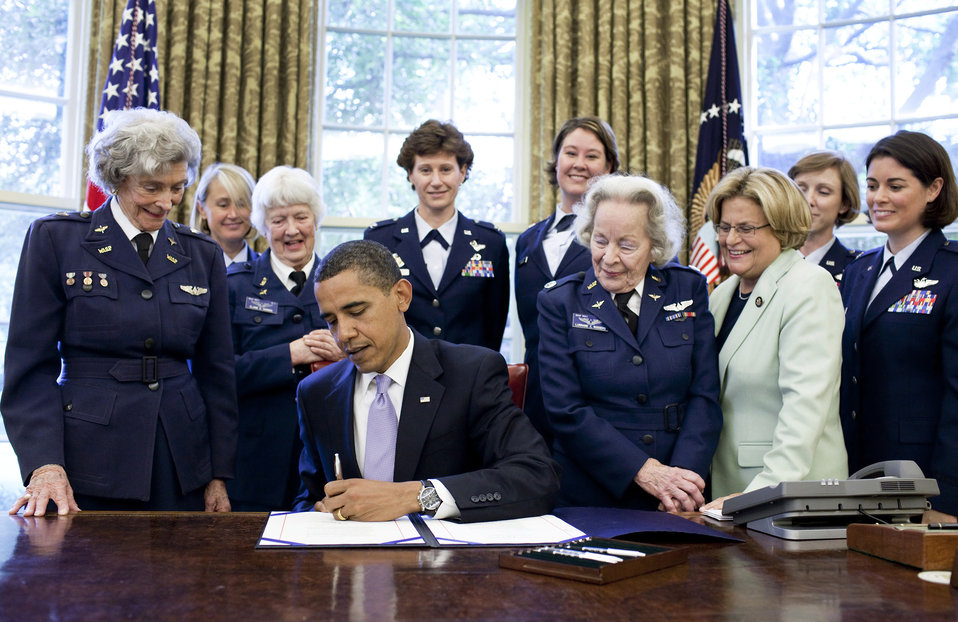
WASP awarded Congressional Gold Medal for service

President Barack Obama signs S.614 in the Oval Office July 1 at the White House. The bill awards a Congressional Gold Medal to Women Airforce Service Pilots. The WASP program was established during World War II, and from 1942 to 1943, more than 1,000 women joined, flying 60 million miles of noncombat military missions. Of the women who received their wings as Women Airforce Service Pilots, approximately 300 are living today.